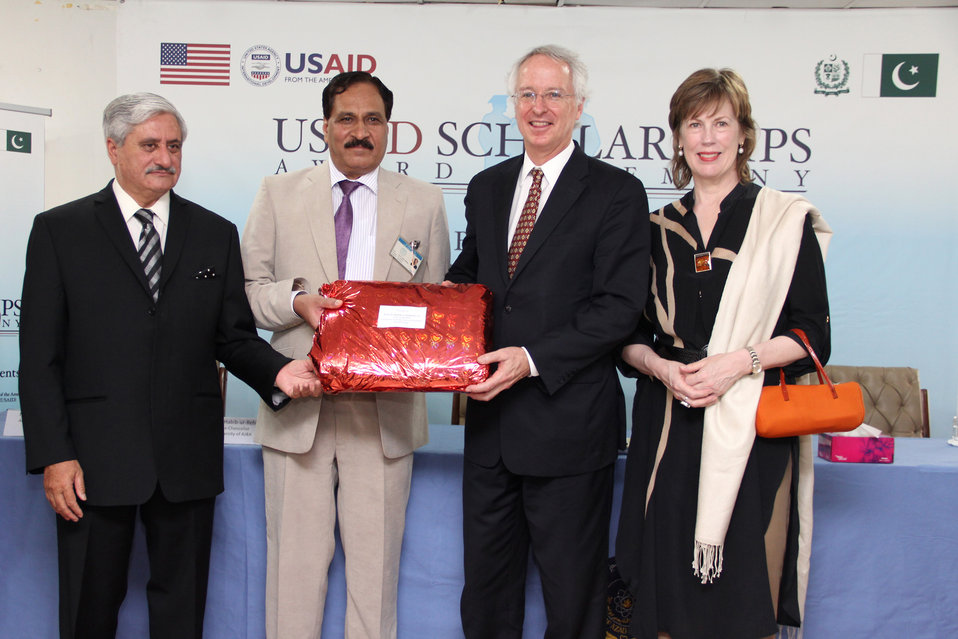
Scholarship distribution ceremony

President AJ&K and Vice-Chancellor University AJ&K presenting gift to Mr. & Mrs. Ambassador